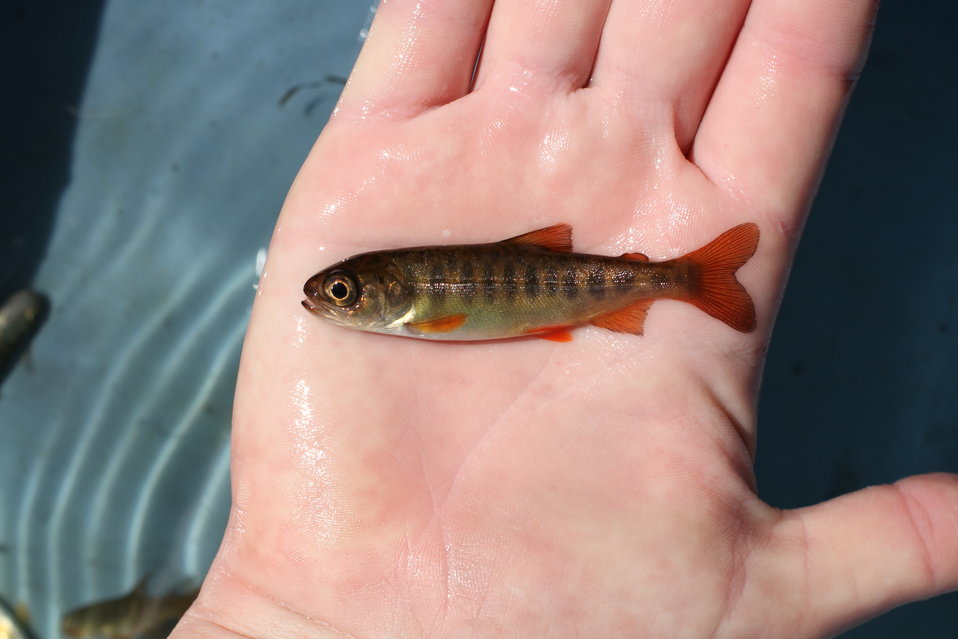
juvenile coho salmon, Fish Creek Alaska

USFWS/Katrina Mueller